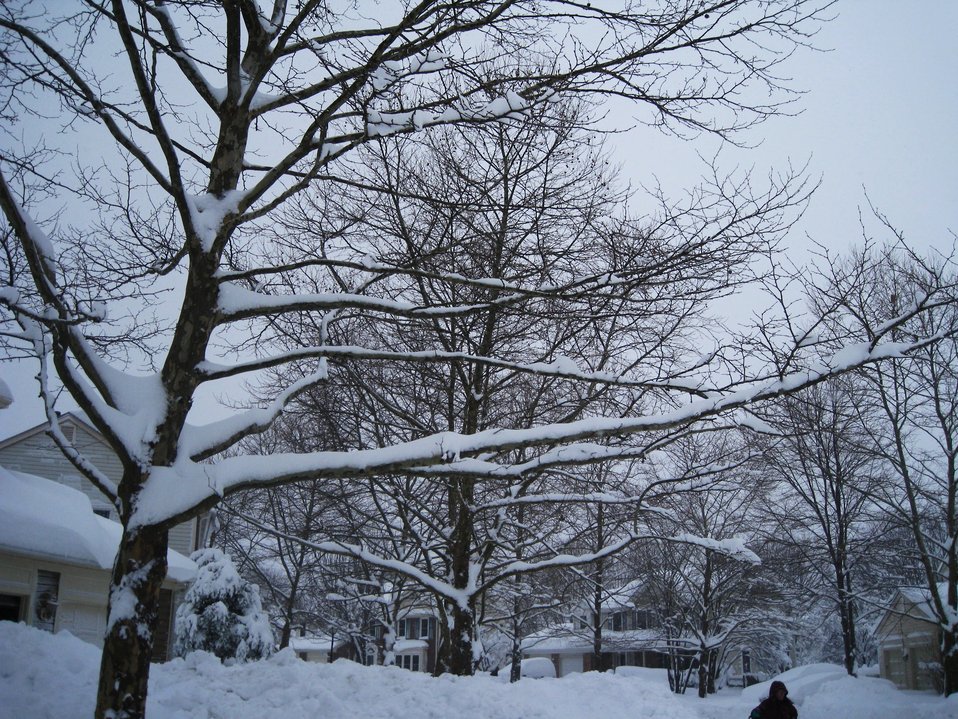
Snow and more snow. Person in lower right gives some idea of scale of snow piles left by plows.